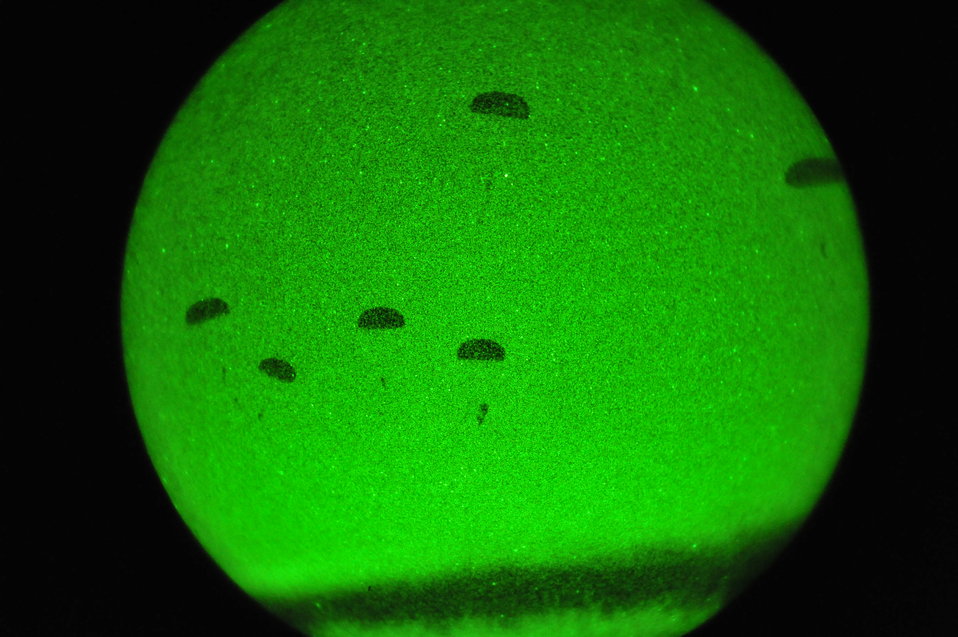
Airborne members of the U.S. Army and Air Force as well as the Canadian 3rd Royal Canadian Regiment are dropped off by a C-130 Hercules onto a drop zone during Joint Operations Access Exercise 12-01 in Fort Bragg, N.C., Feb. 12, 2012. The members then met at their rally point to continue on with their mission. The objective of JOAX was to ensure airborne units’ training is current and they are able to perform a full spectrum of operation skills during a parachute assault.